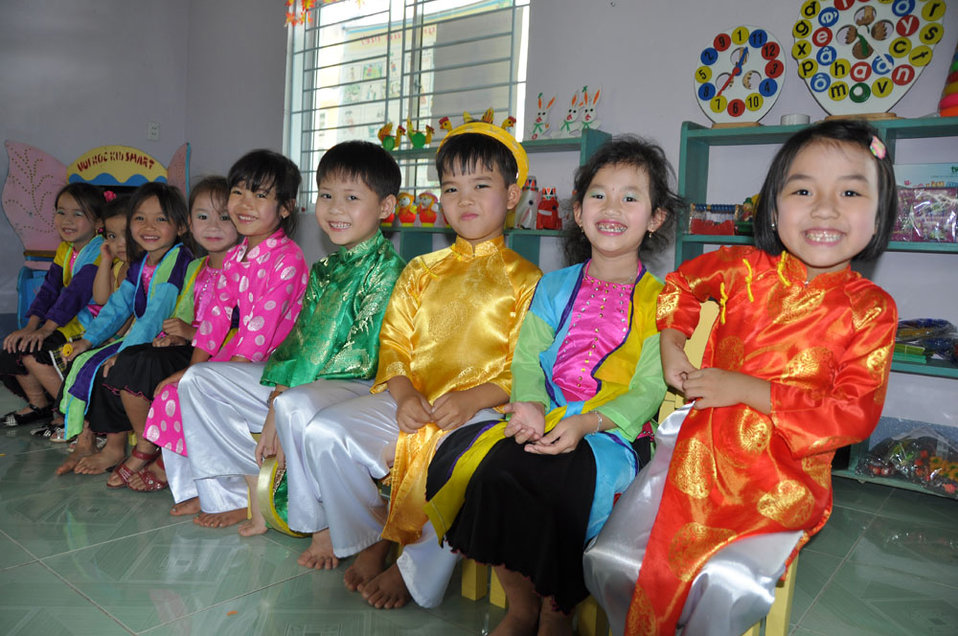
Children in Kon Tum, Vietnam, enjoy their new pre-schools refurbished with USAID funding